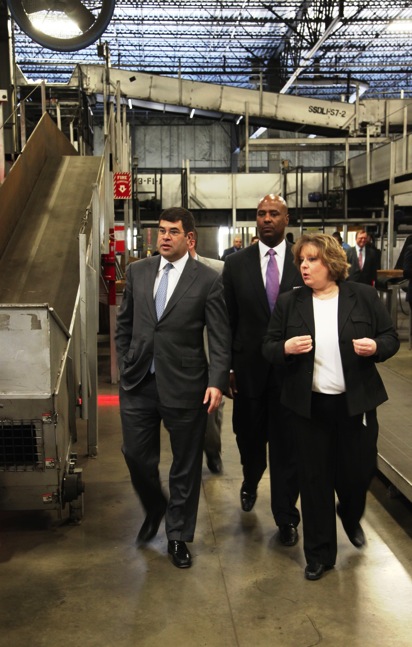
Deputy Secretary Neal Wolin visits UPS consolidation hub

On February 25, 2013, Acting Secretary Wolin (left) visited a UPS consolidation hub near Chicago to see the importance of infrastructure and education to businesses and economic growth. Pictured with (l. to r.) UPS Central Region President Stan Deans and Human Resources Recruiter Tracy Koblich